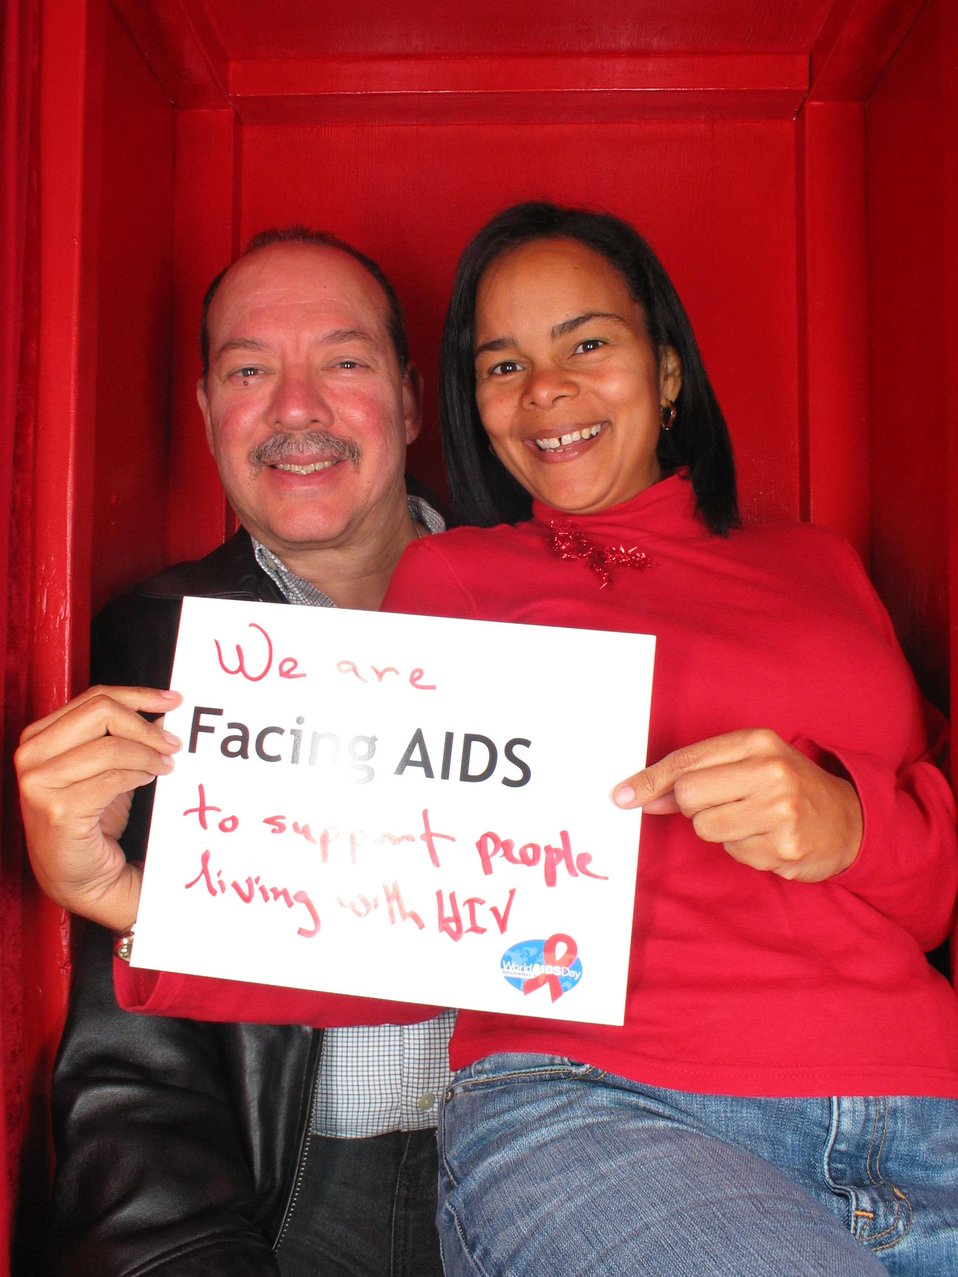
We are Facing AIDS to support people living with HIV